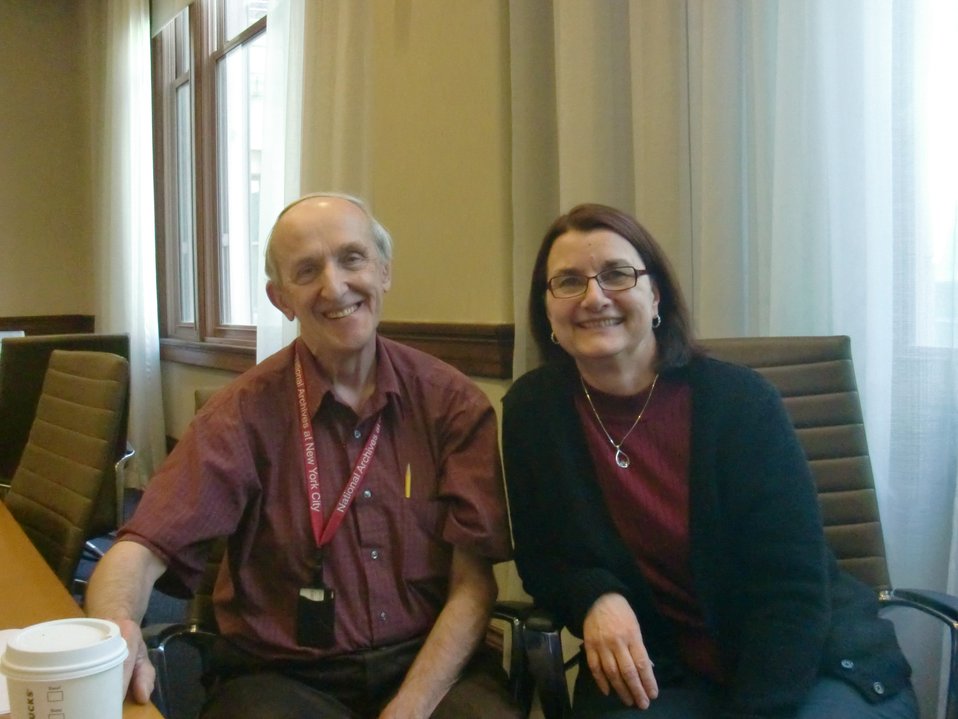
Conference room with Greg Plunges, Archivist and Carol Savo, Archives Specialist; Location: National Archives at New York, New York, New York